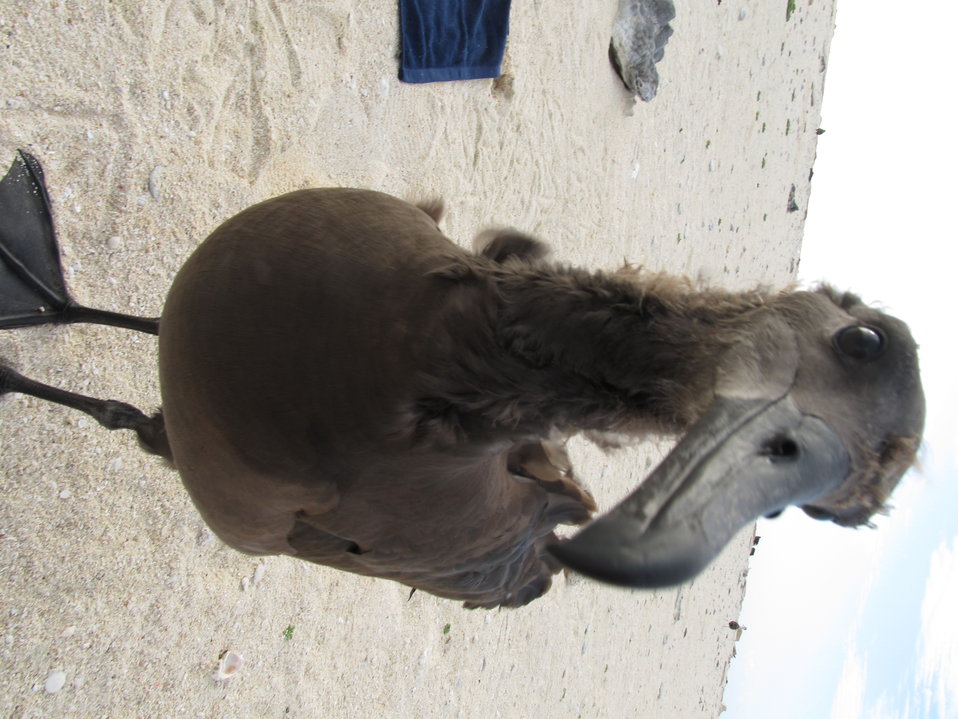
Get Your Goose On! - Albatross Style

Photo taken at Laysan Island in the Papahanaumokuakea Marine National Monument, Hawaiian Islands National Wildlife Refuge. Laysan is located approximately 800 miles northwest of Honolulu, Hawaii and is a remote field camp staffed year round for habitat restoration and population monitoring.